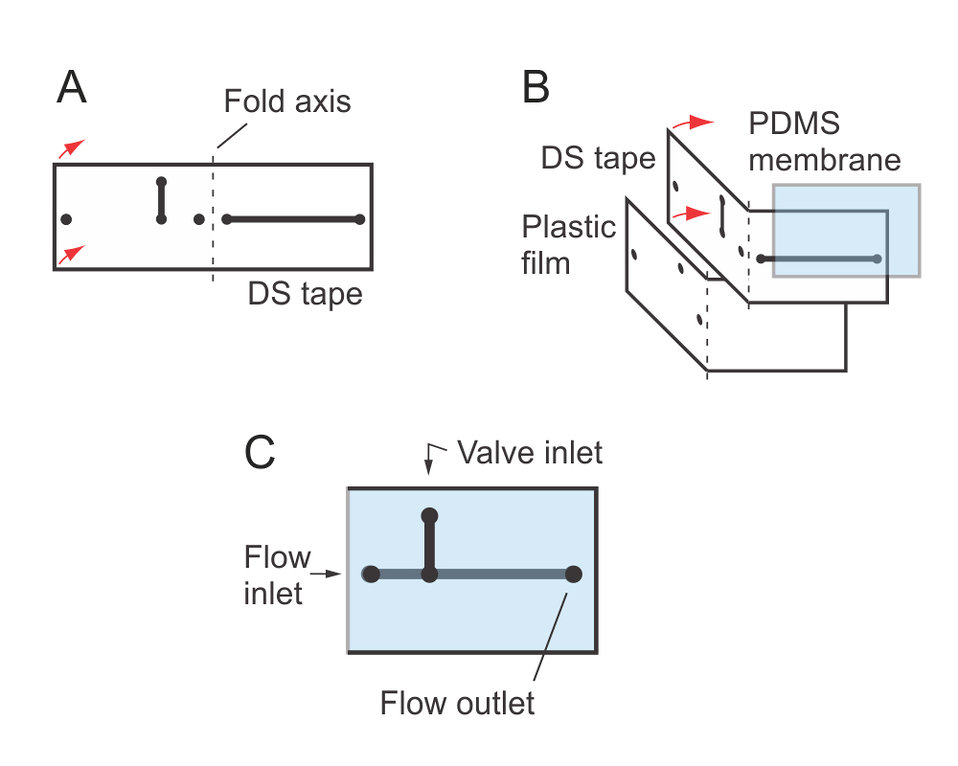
Microfluidic Device

Double-sided tape is cut with channels and ports that will align when folded (A). The polymer membrane that supplies the valve function for the microfluidic device is sandwiched in between (B). The completed apparatus (C) has ports for fluid flow into and out of the device, as well as a valve inlet for air. Air pressure pushes the membrane into the flow channel, blocking fluid movement.